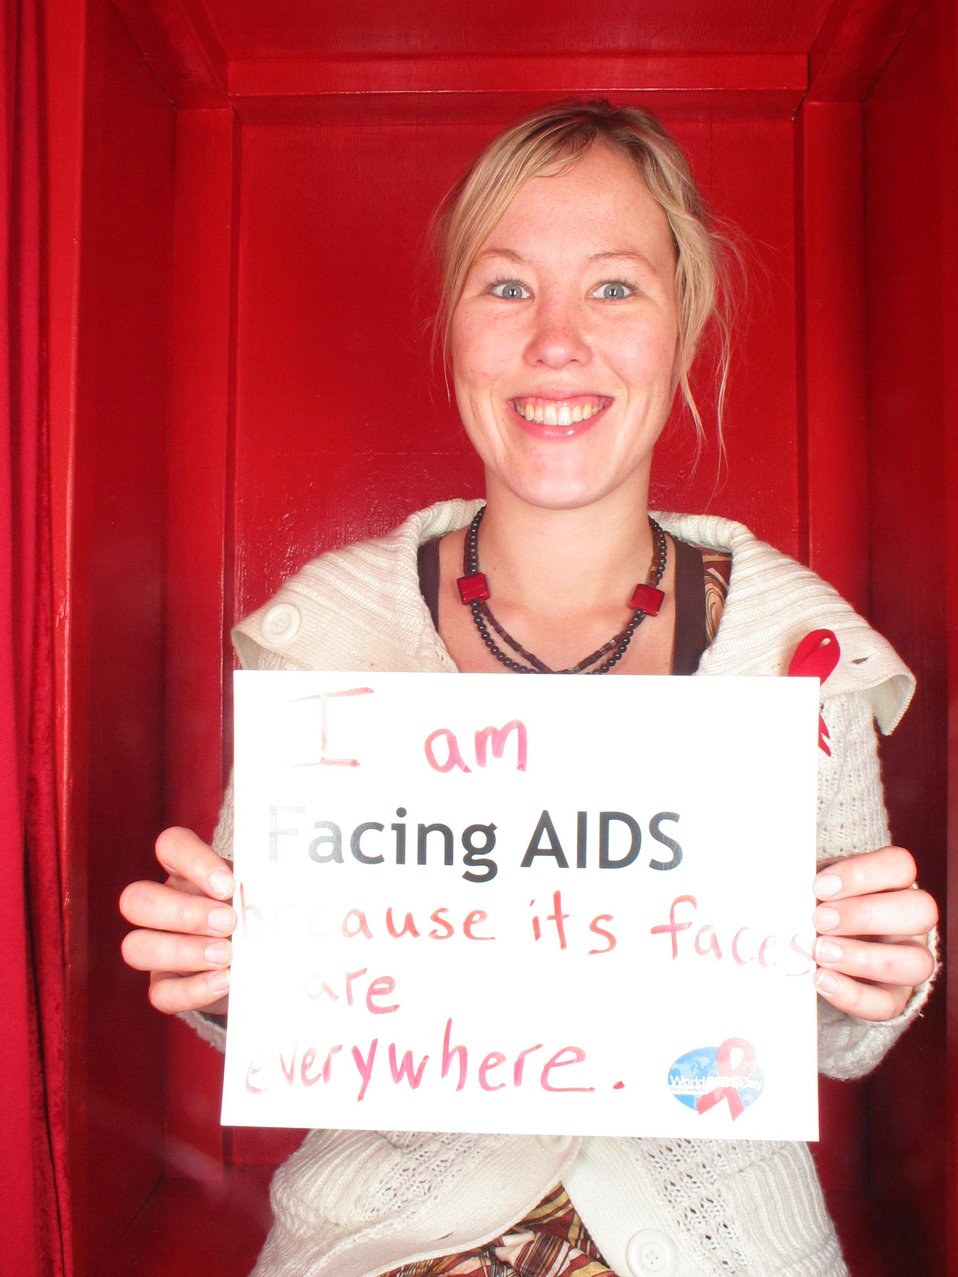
I am Facing AIDS because its faces are everywhere.